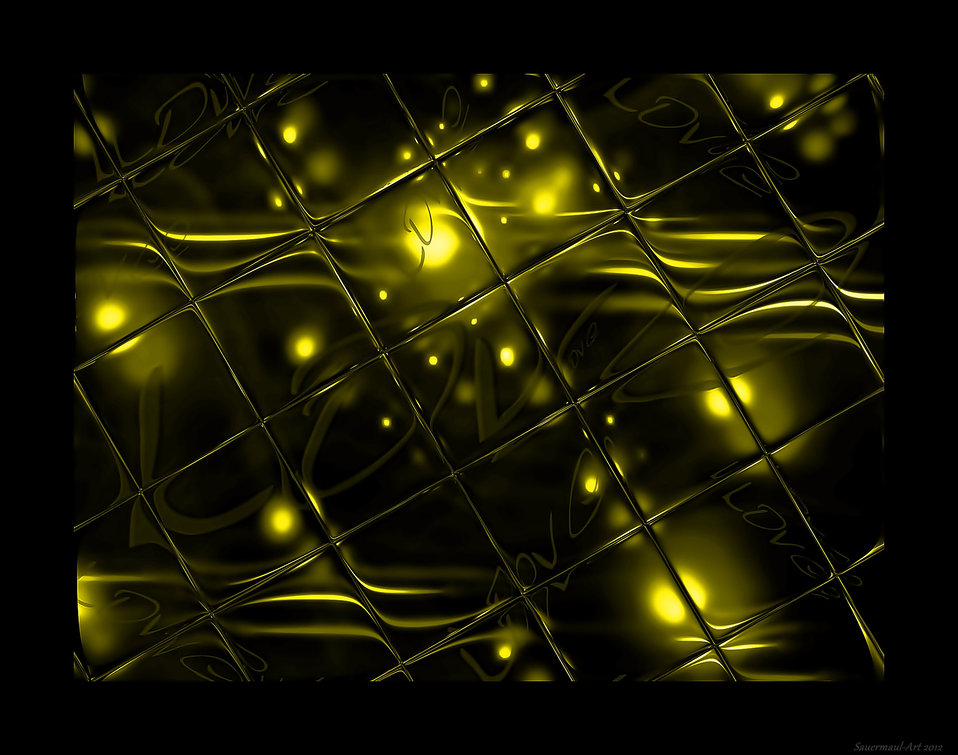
Picture of love in yellow

Declaration of love.